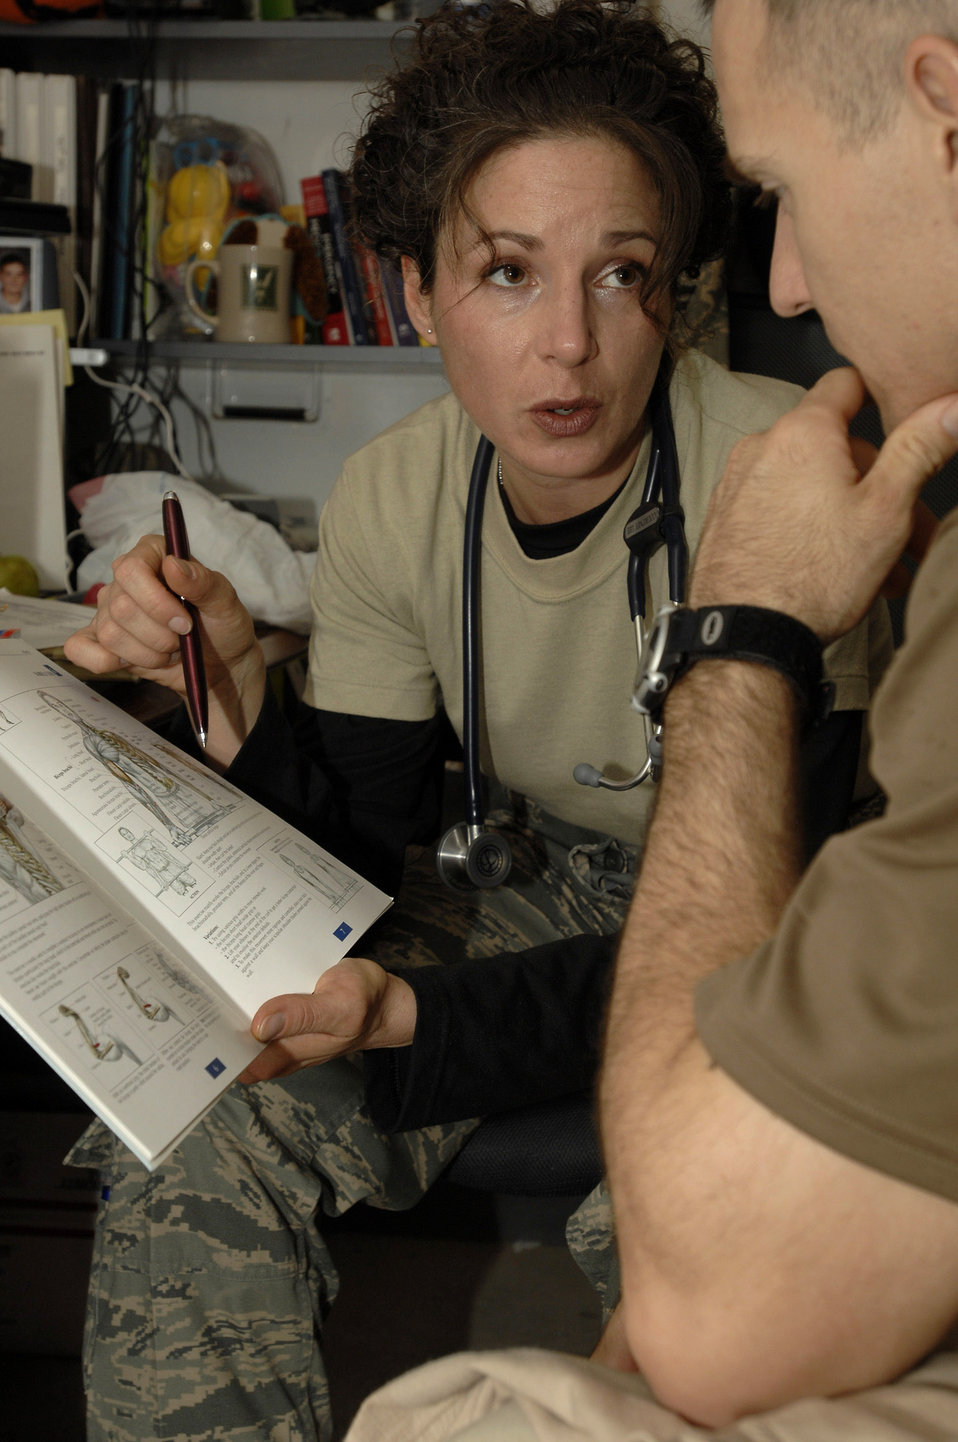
Show me where it hurts

Physician Assistant Capt. Courtney Lee shows a patient his exact injury and explains how to rehabilitate from it Dec. 11in the 407th Expeditionary Medical Squadron Clinic at Ali Base, Iraq. Captain Lee is responsible for the care of Air Force personnel on base and is one of ten medical members who are emergency medicine certified. Captain Lee is deployed from Travis Air Force Base, Calif.